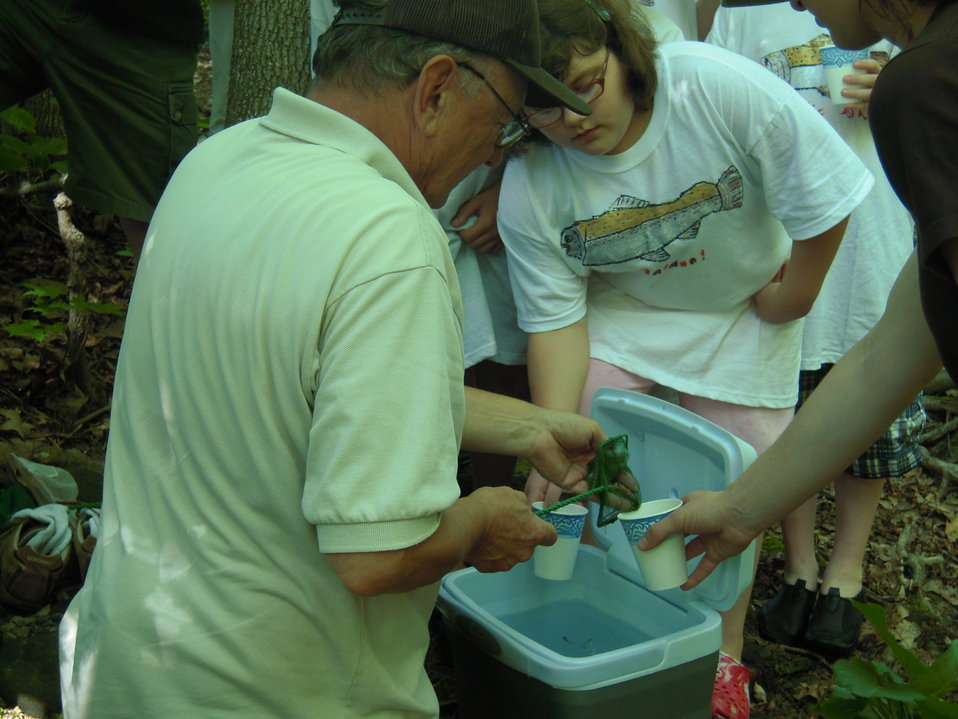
Distributing salmon fry for release